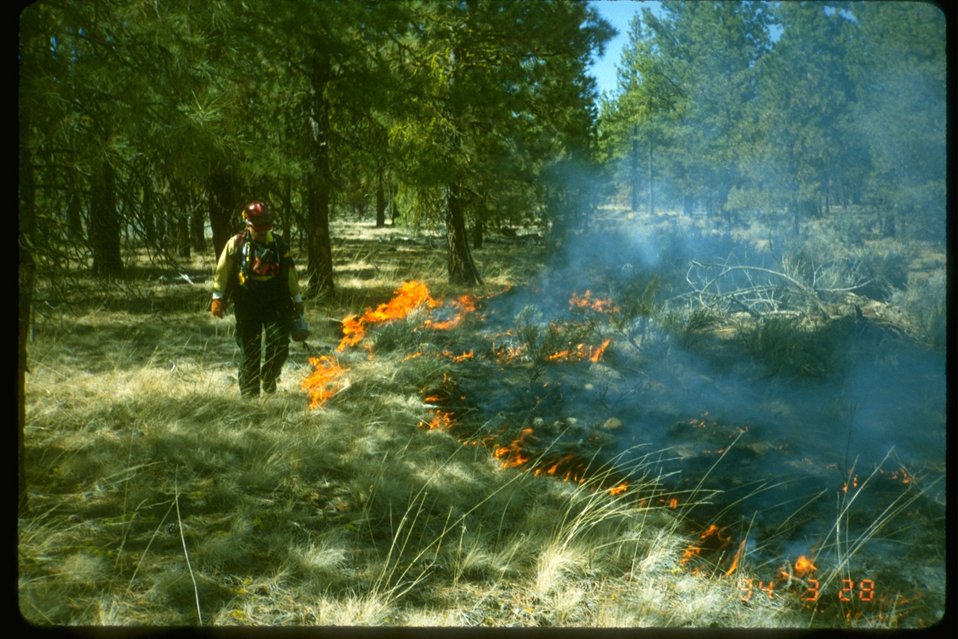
Underburning of grass.